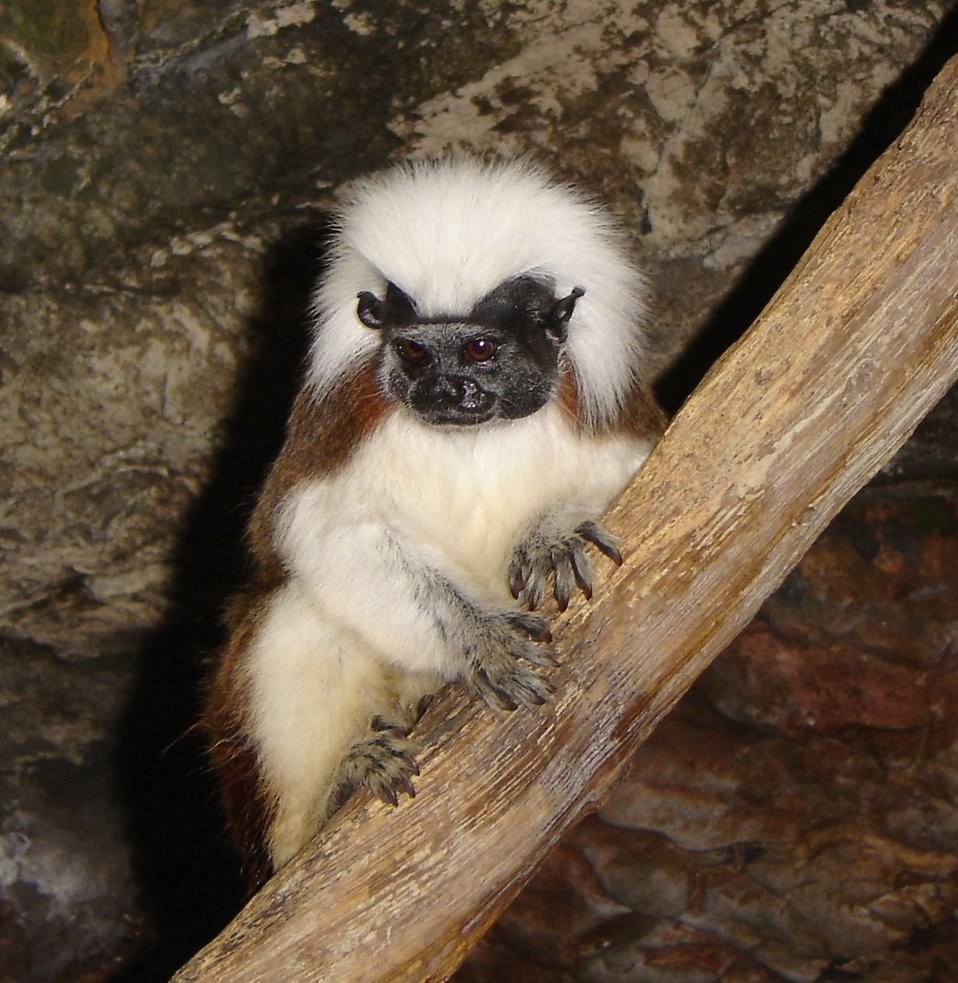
Saguinus oedipus A Lisztaffe or Cottontop Tamaran at the Salzburg Zoo, Salzburg Austria, October 2004